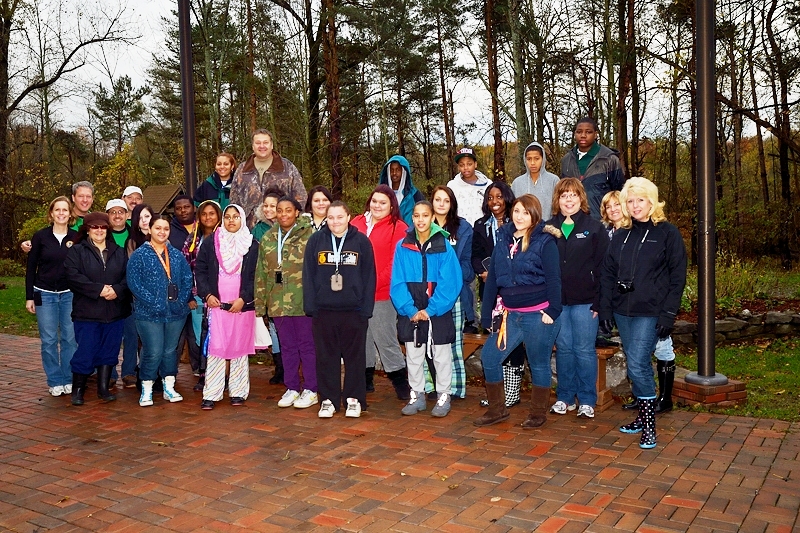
McKinley High School Students at Reinstein Woods Nature Preserve

Students from McKinley High School in Buffalo, NY teamed up with the Lower Great Lakes Fish and Wildlife Conservation Office and their friends group, the Great Lakes Experience to learn about nature photography